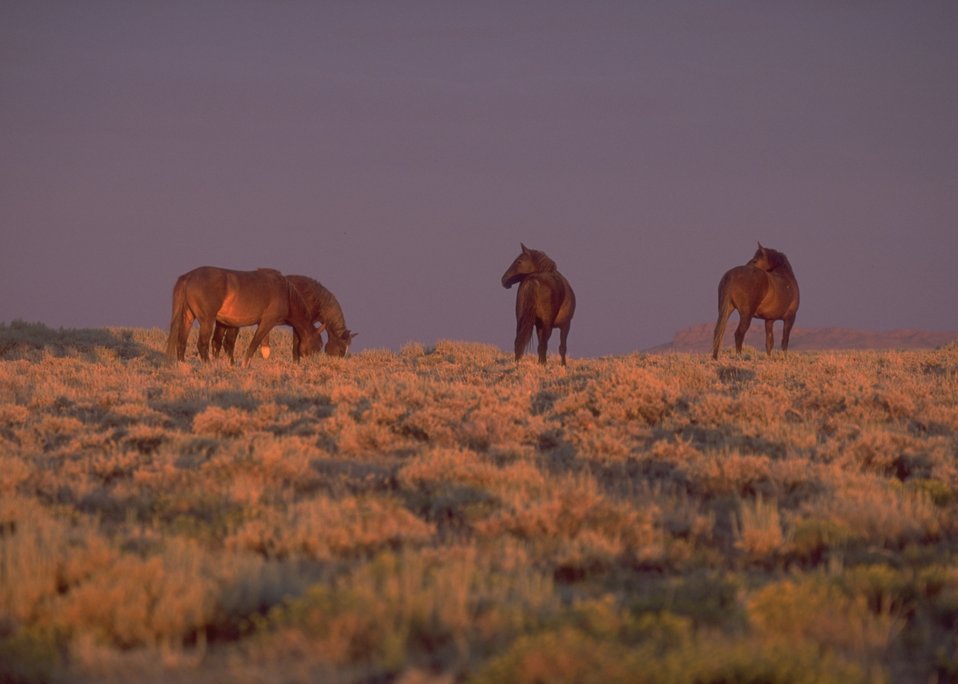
Wild horses, Rock Springs Field Office.